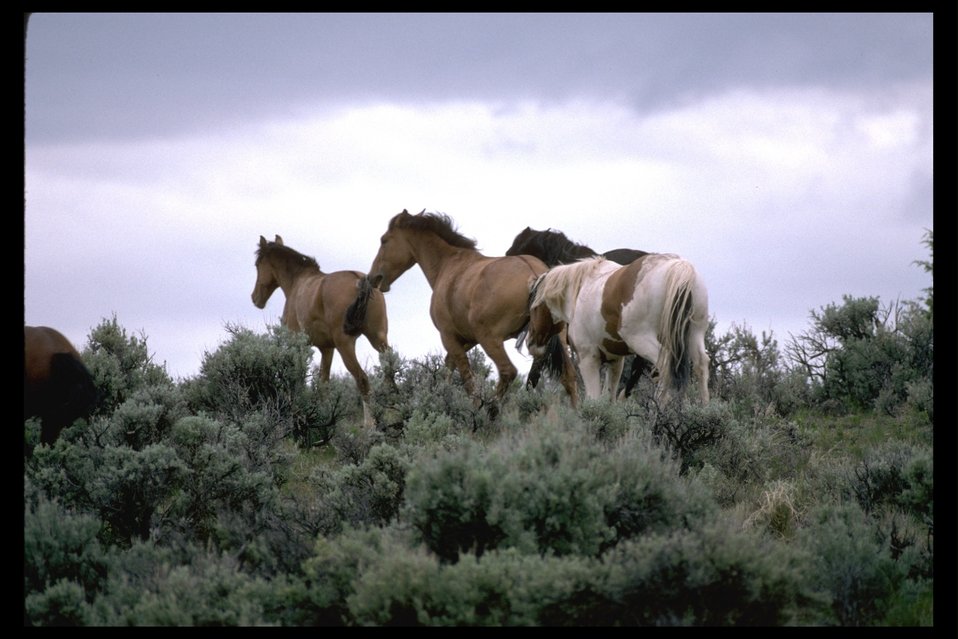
Wild horses in the South Steens HMA.